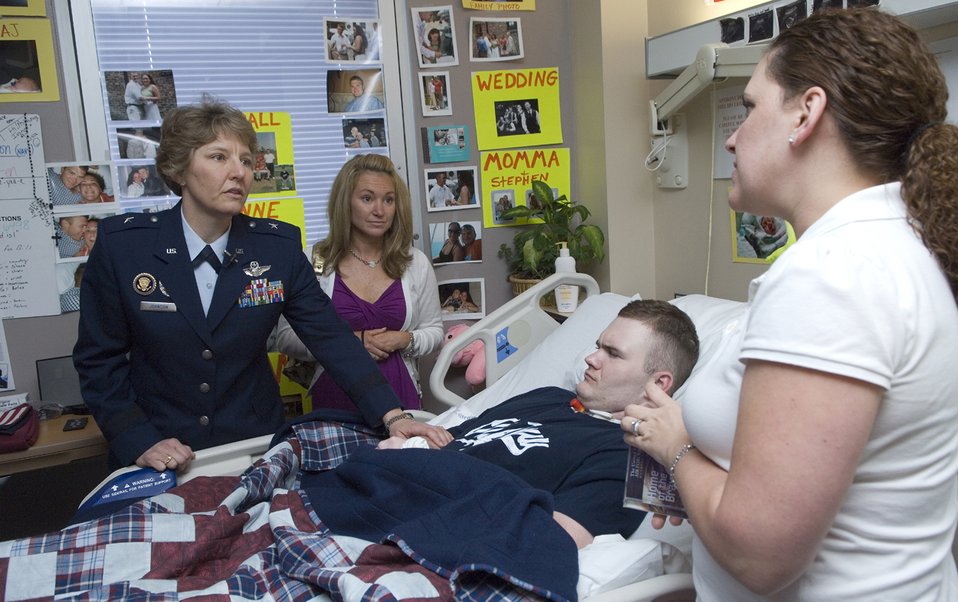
General leads morale tour at Tampa VA hospital

Brig. Gen. Michelle D. Johnson talks with Ivoan Thompson, the wife of wounded Navy Corpsman Anthony Thompson April 5 at the James A. Haley Veterans' Hospital in Tampa, Fla. General Johnson along with cheer and dance squads from the 2008 Women's Final Four basketball teams visited the hospital to share smiles and stories with retired and active duty members and their families.